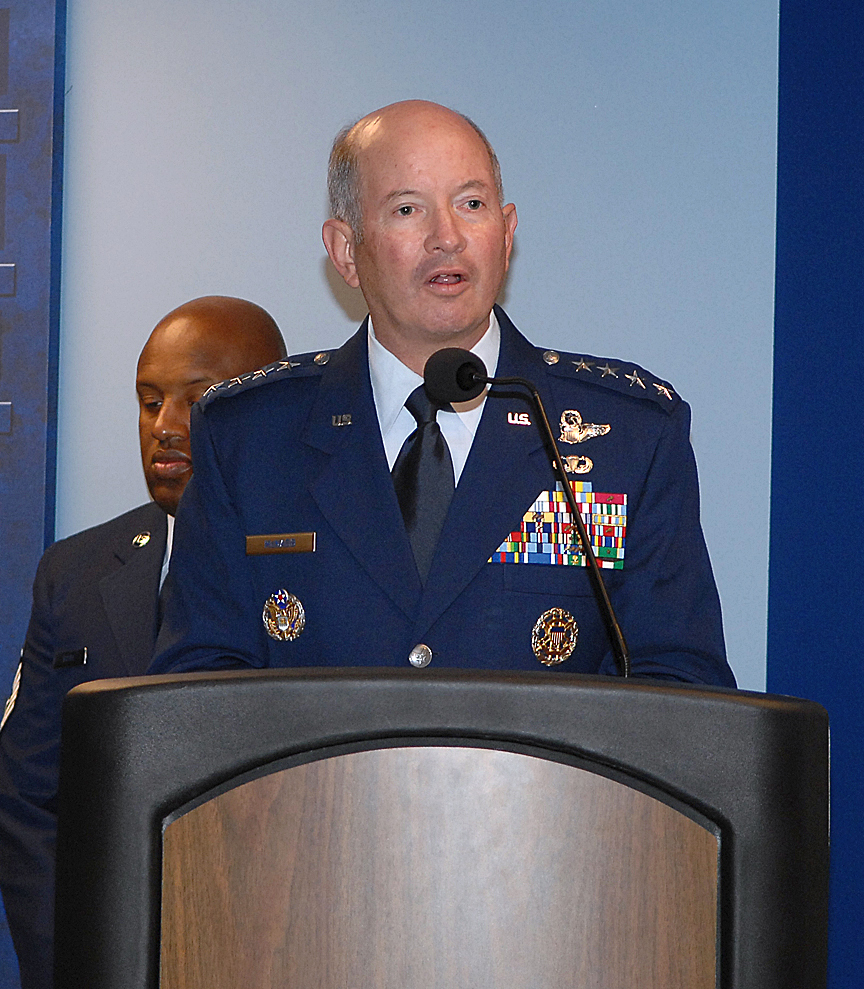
Airmen receive Sijan leadership award

Vice Chief of Staff of the Air Force Gen. Duncan J. McNabb speaks at the Lance P. Sijan Air Force Leadership Award ceremony Aug. 20 at the Pentagon. The Sijan Award recognizes Airmen who demonstrated outstanding leadership while assigned to an organization at the wing level or below.